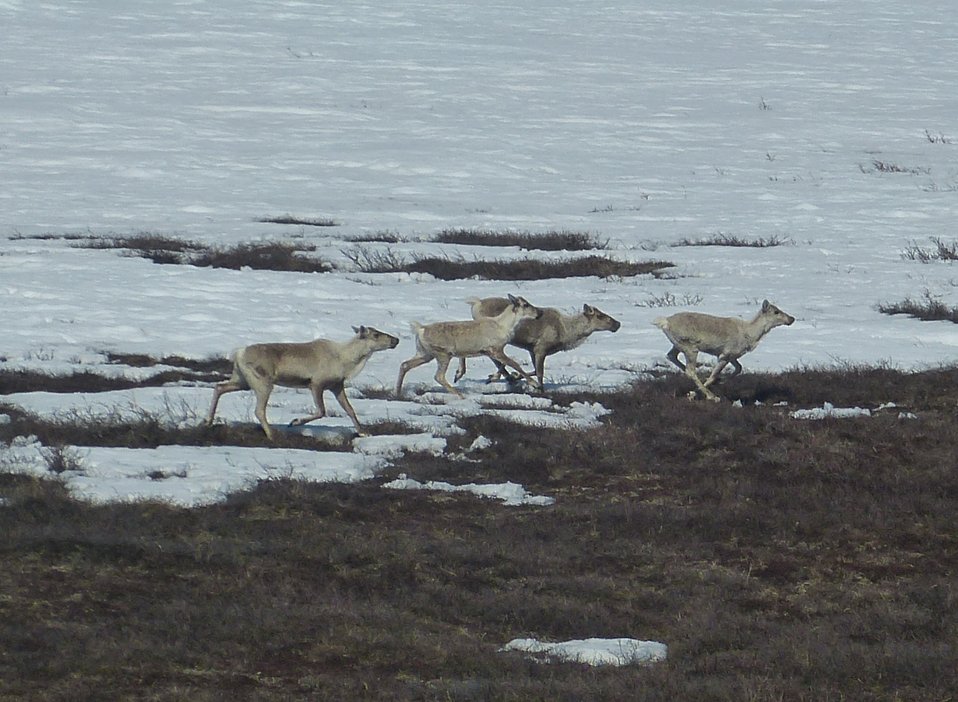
Caribou in Kilbuck Mountains on Yukon Delta National Wildlife Refuge

Photo credit: Kristine Sowl
USFWS, Yukon Delta National Wildlife Refuge